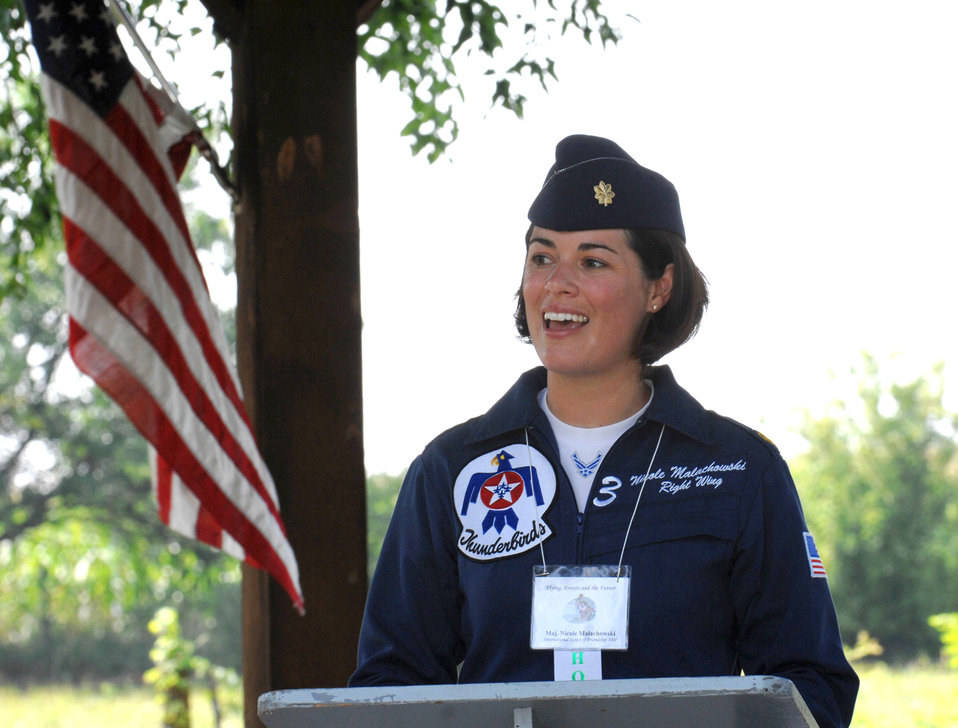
Thunderbird sees the forest for the trees

Maj. Nicole Malachowski speaks at a ceremony honoring her induction into the International Forest of Friends Aug. 4 at Atchison, Kan. She is first female pilot with the Thunderbirds.